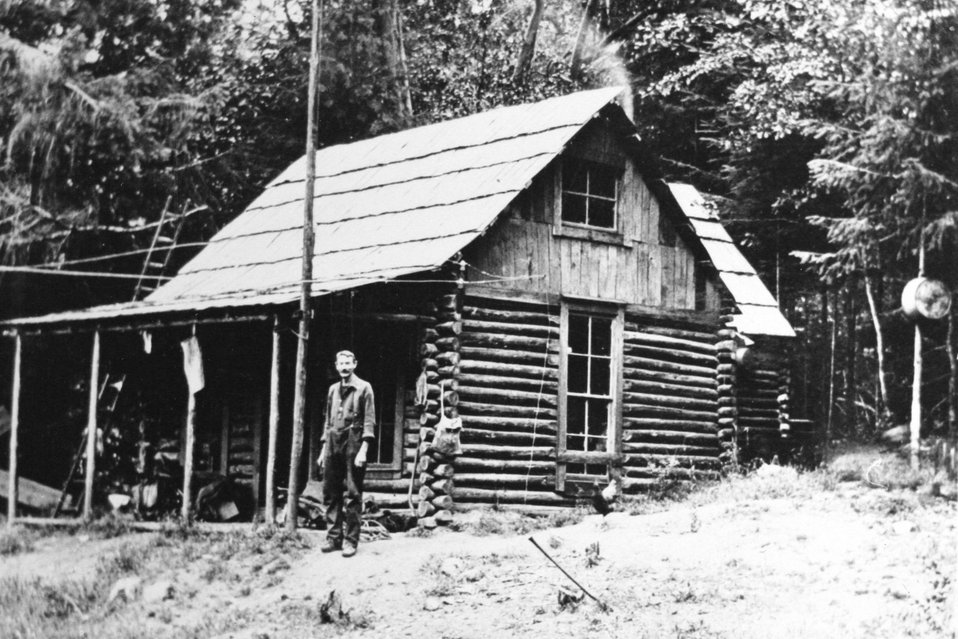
Price Copsey at cabin.